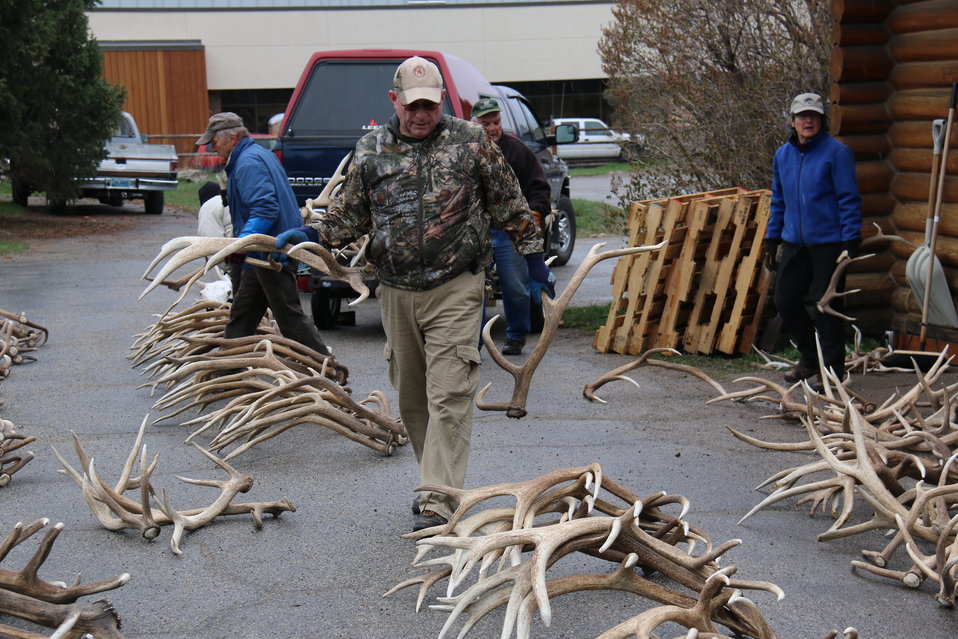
Hours of Sorting

Scout leaders spend hours pulling the antlers out of a large pile and sorting them according to color, size, and shape.